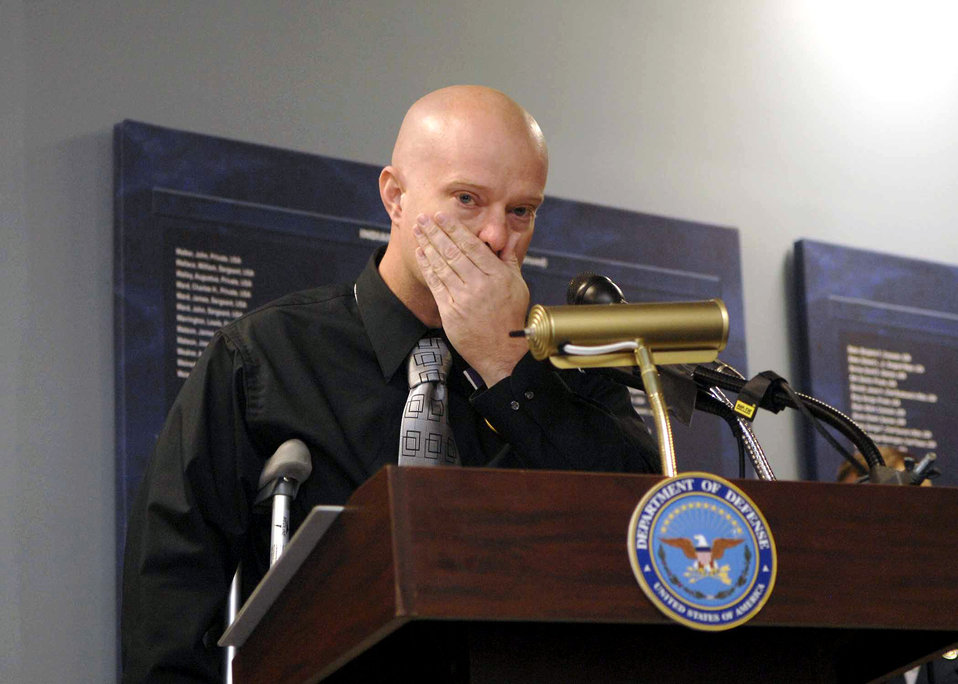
Air Force broadcaster receives Purple Heart

Tech. Sgt. Jeramie Brown's eyes welled with tears as he acknowledged the Airmen and Soldiers who cared for him after being injured in a mortar attack while deployed as a broadcaster in Iraq. Sergeant Brown received the Purple Heart during a ceremony Sept. 17 at the Pentagon for injuries he sustained in the attack.